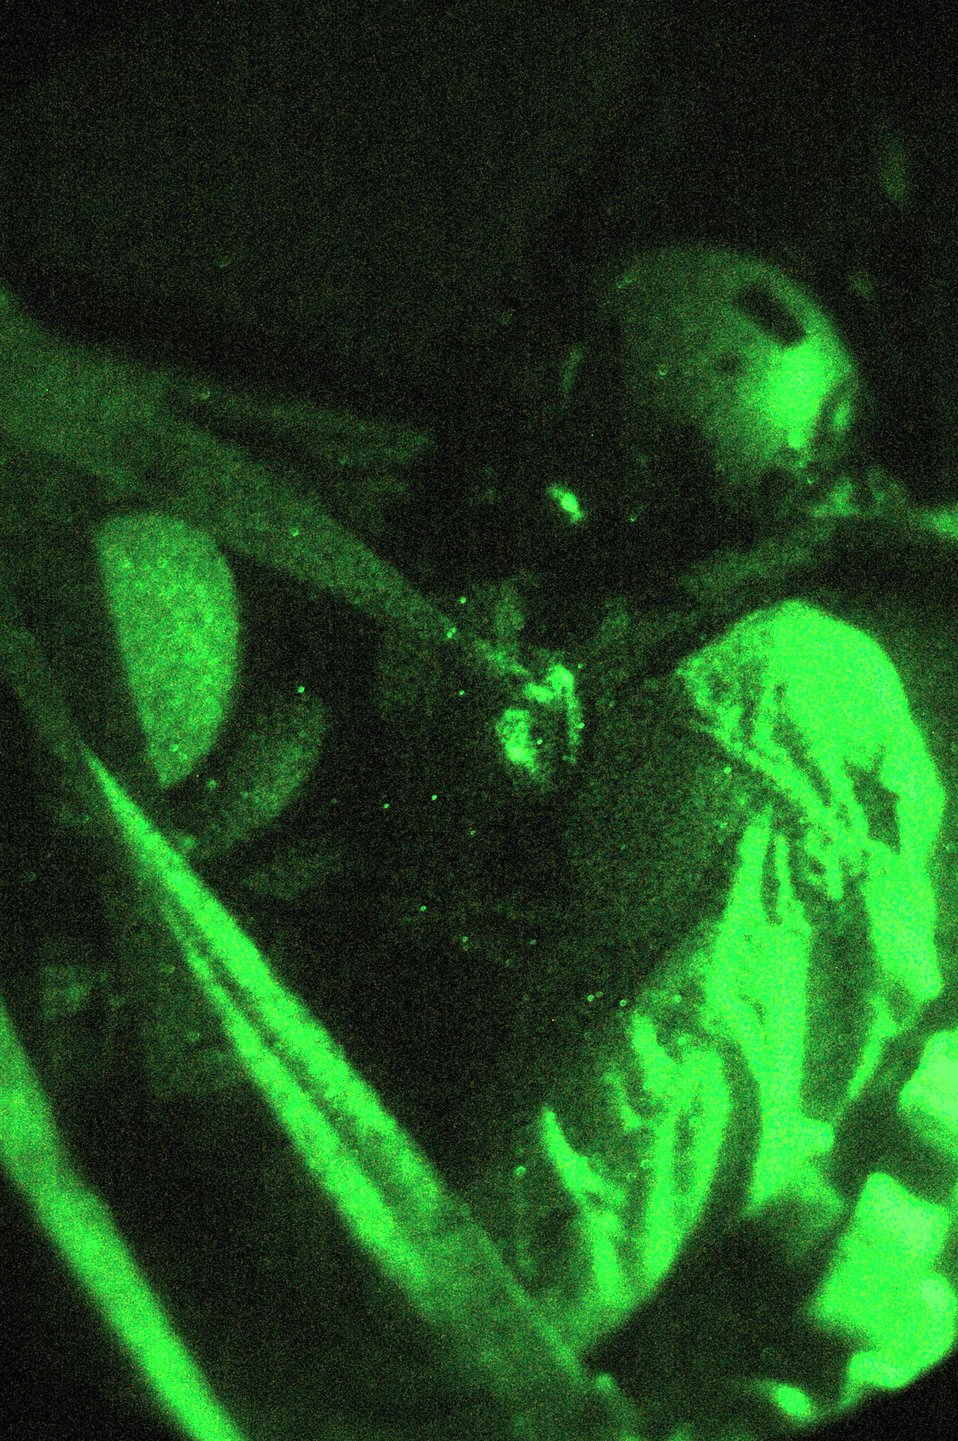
Airmen perform leaflet drop over Afghanistan

Tech. Sgt. Kevin Letz watches through a C-130 Hercules window during a leaflet drop mission in October over Afghanistan. Sergeant Letz watches for enemy activity using night-vision goggles to ensure the safety of the crew and aircraft from possible enemy attack. Sergeant Letz, a 40th Expeditionary Airlift Squadron loadmaster is deployed from Dyess Air Force Base, Texas.